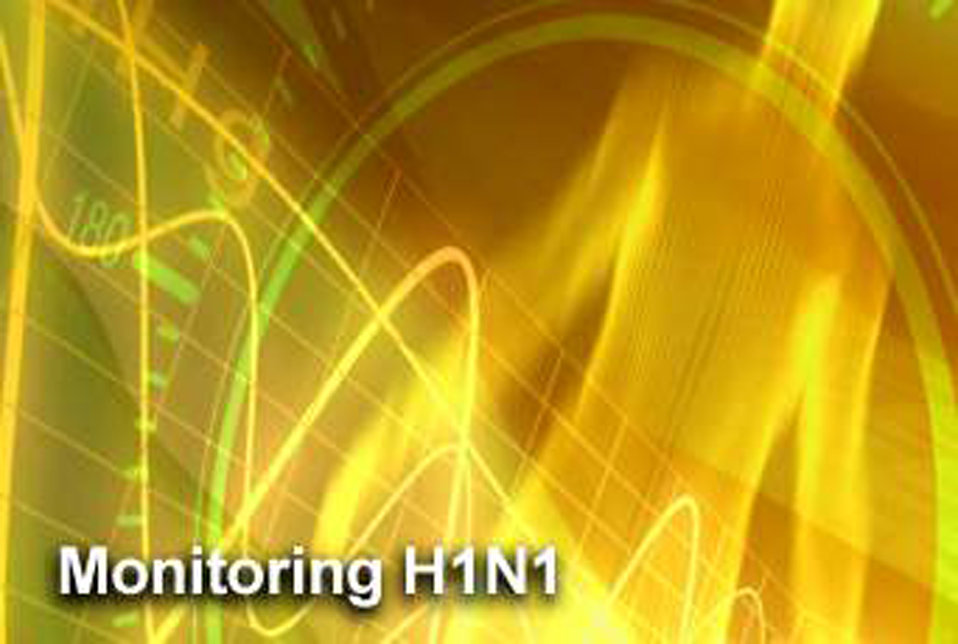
Military continues to monitor H1N1 flu virus' path

The U.S. military has prepared for years to confront a public health challenge like the H1N1 influenza virus, a senior Defense Department official said. Armed Forces Health Surveillance Center officials reported a total of 24 confirmed H1N1 cases in the U.S. military, including 13 military family members, 10 active-duty servicemembers and one Marine recruit. The cases occurred in Texas and California.